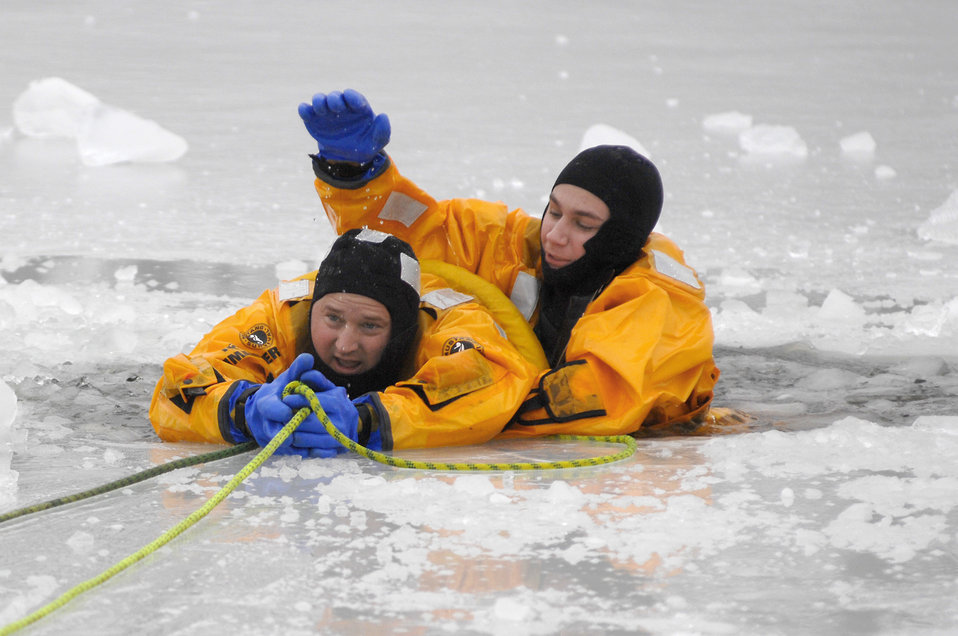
Ice rescue training

Two 509th Civil Engineer Squadron members are pulled from an icy hole during ice rescue training Jan. 31, 2011, at Whiteman Air Force Base, Mo.